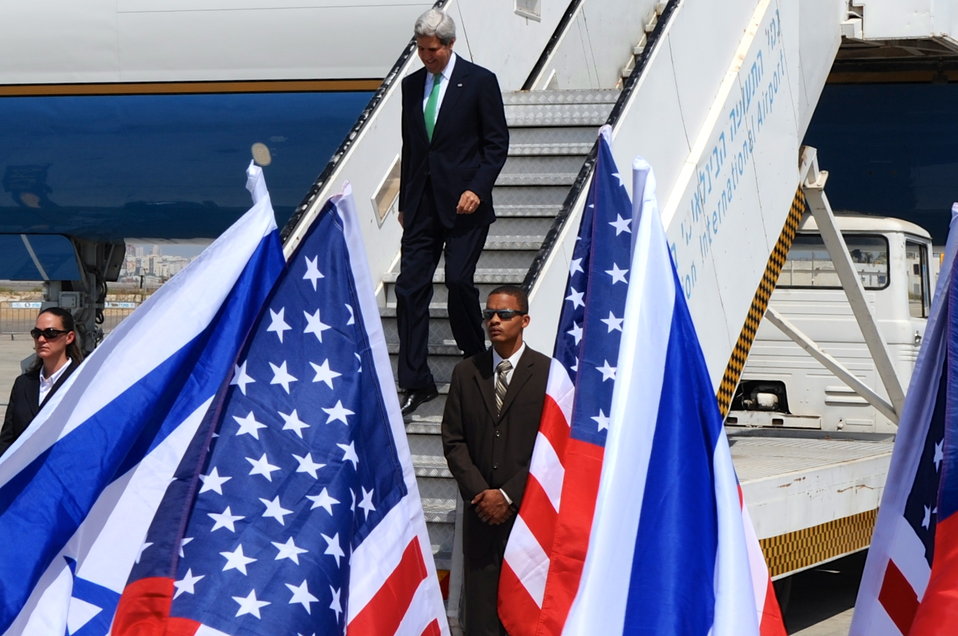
Secretary Kerry Arrives in Israel for Meeting with Prime Minister Netanyahu

U.S. Secretary of State John Kerry arrives at Ben David Gurion International Airport ahead of a meeting with Israeli Prime Minister Benjamin Netanyahu on September 15, 2013.